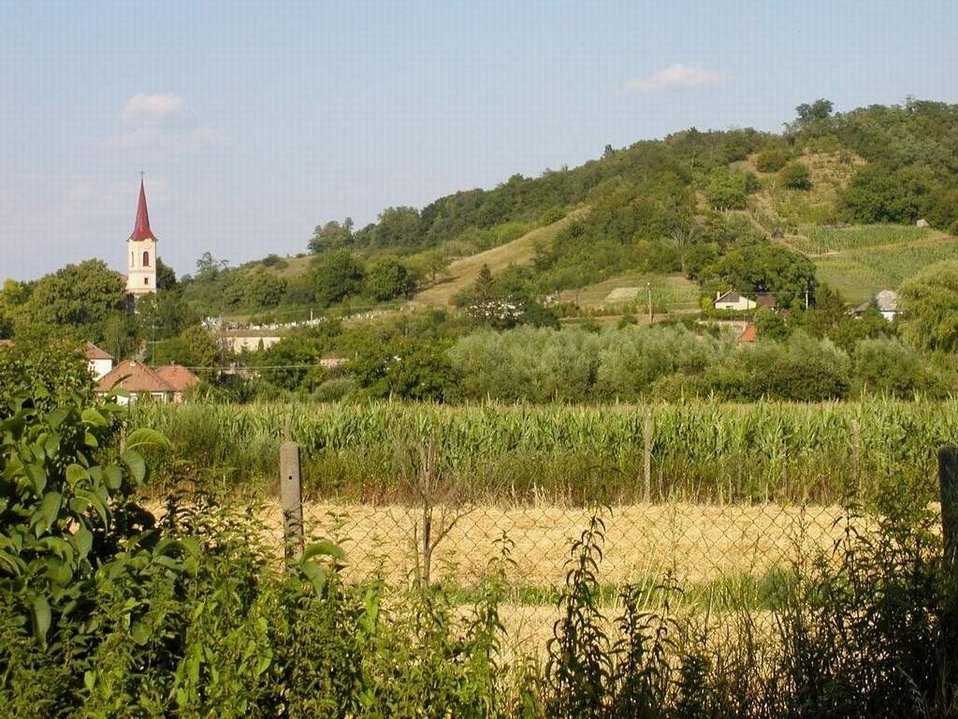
Pohľad na obec Licencovanie: Autorom fotografie je Imrich Šimonek z Dubníka sk:Kategória:Presunúť na Commons